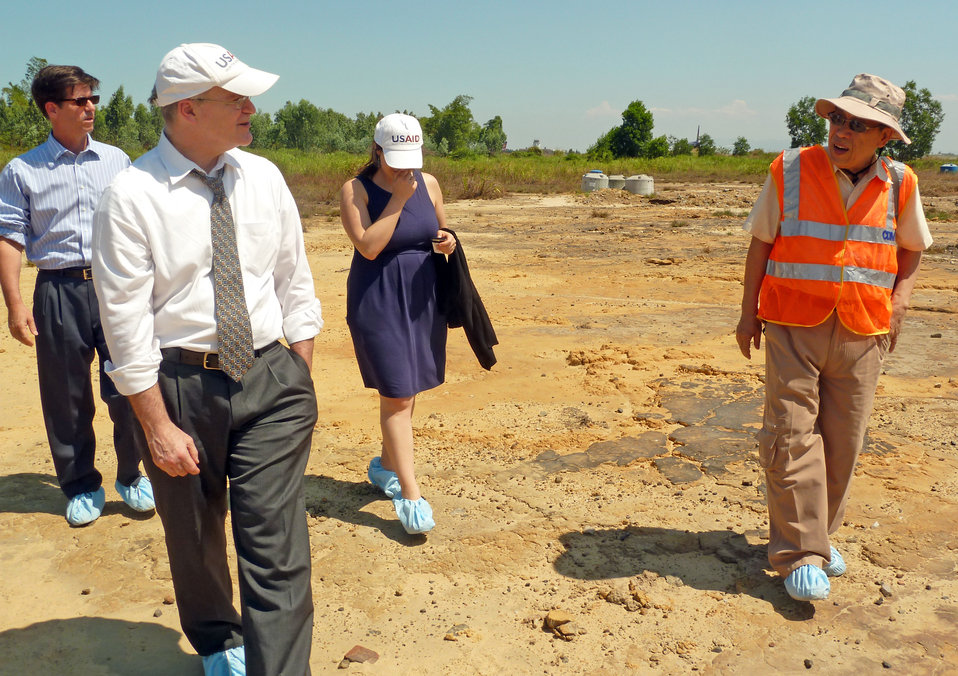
Deputy Administrator Donald Steinberg visits Danang Airport

USAID Deputy Administrator Donald Steinberg Visits Vietnam